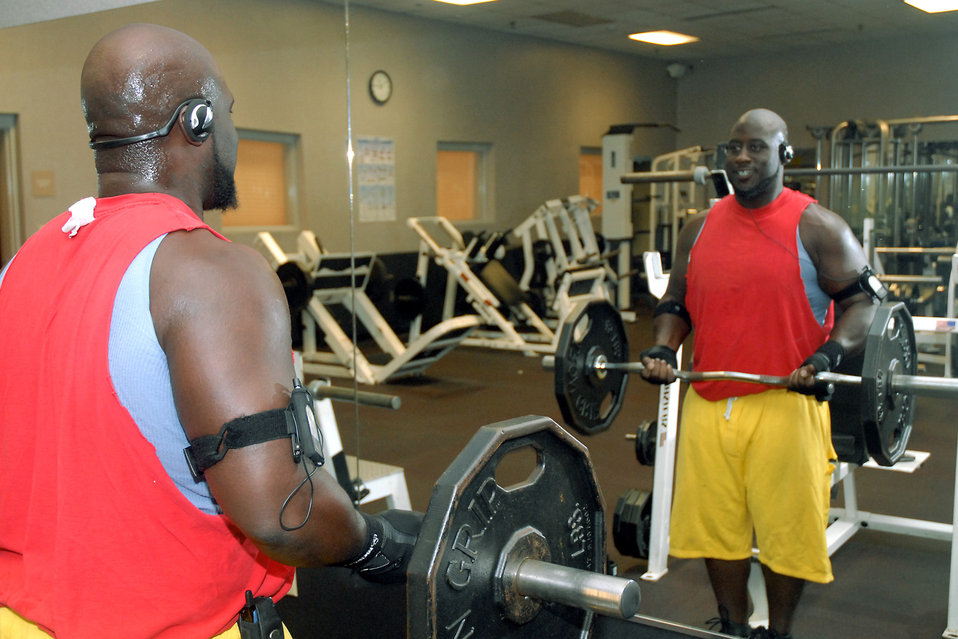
DOD civilian drops 120 pounds with Air Force's help

Dominick Ward does bicep curls Oct. 15 at the fitness and sports center on Charleston Air Force Base, S.C. He recently lost 120 pounds with the help of wingmen and an Air Force instruction allowing him excused absence to exercise three hours a week during the work day. Mr. Ward is a civilian pickup and delivery forklift operator assigned to the 437th Logistics Readiness Squadron.